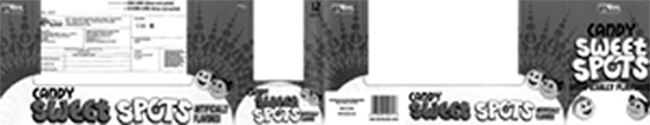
RECALLED – Candy “Sweet Spots”

December 12, 2013 – Product Recall – Bee International Issues Allergy Alert on Undeclared Egg in 'Sweet Spots'.